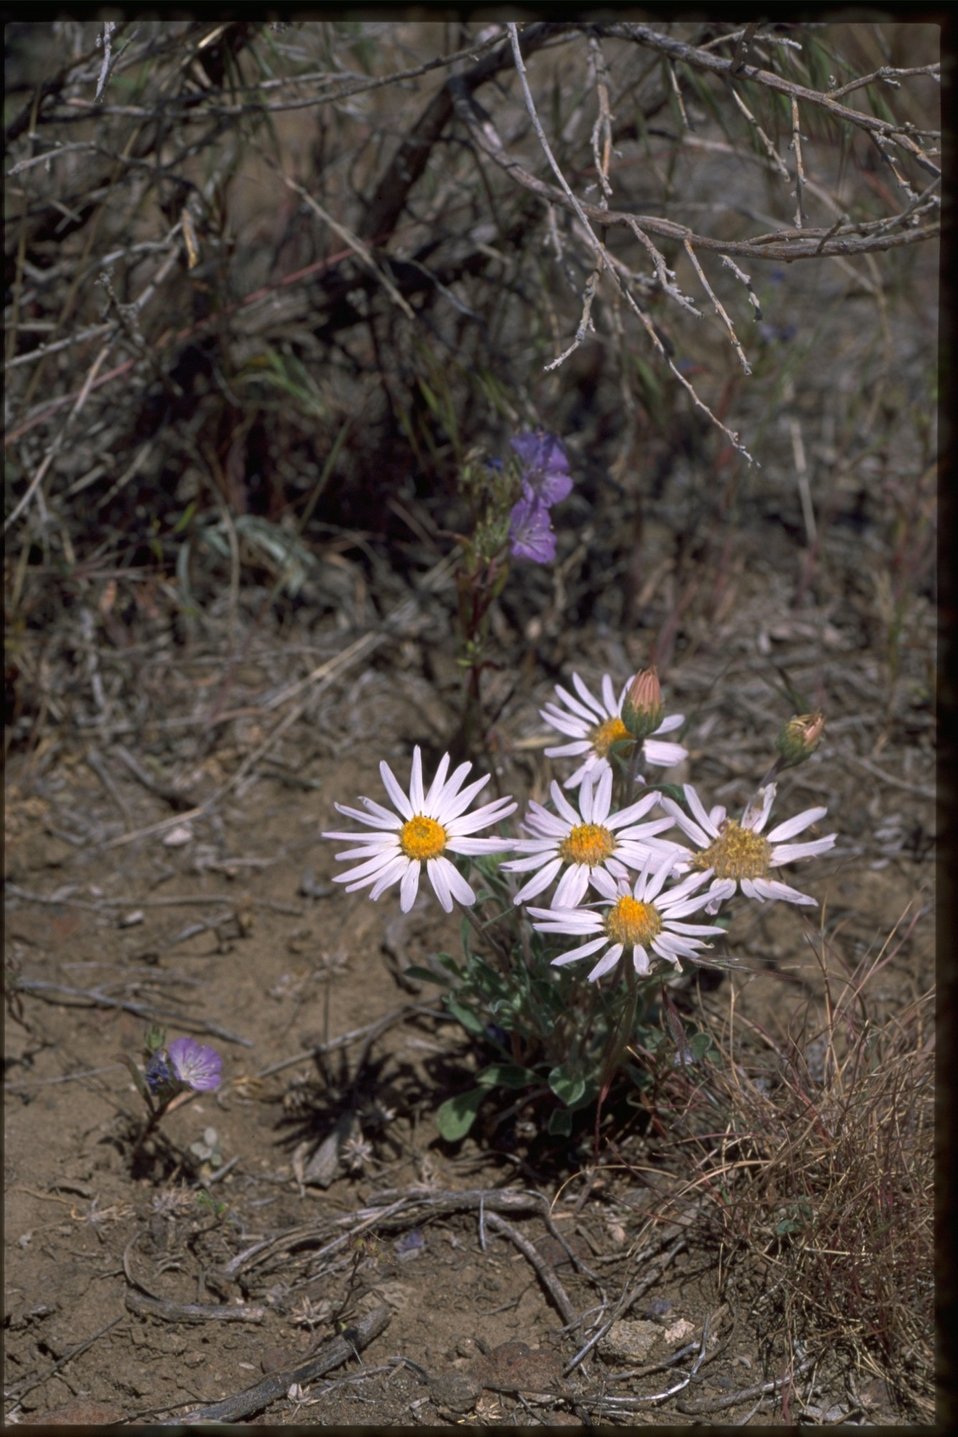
Farshot of Asteraceae.